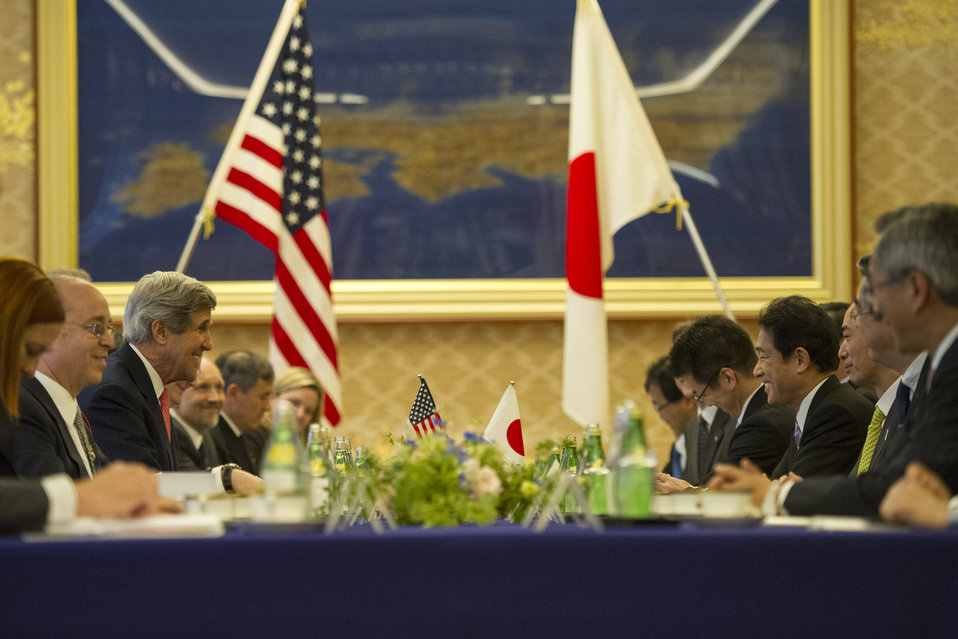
Secretary Kerry with Japanese Foreign Minister Kishida

U.S. Secretary of State John Kerry sits down with Japanese Minister for Foreign Affairs Fumio Kishida for their bilateral meeting in Tokyo, Japan, on April 14, 2013.